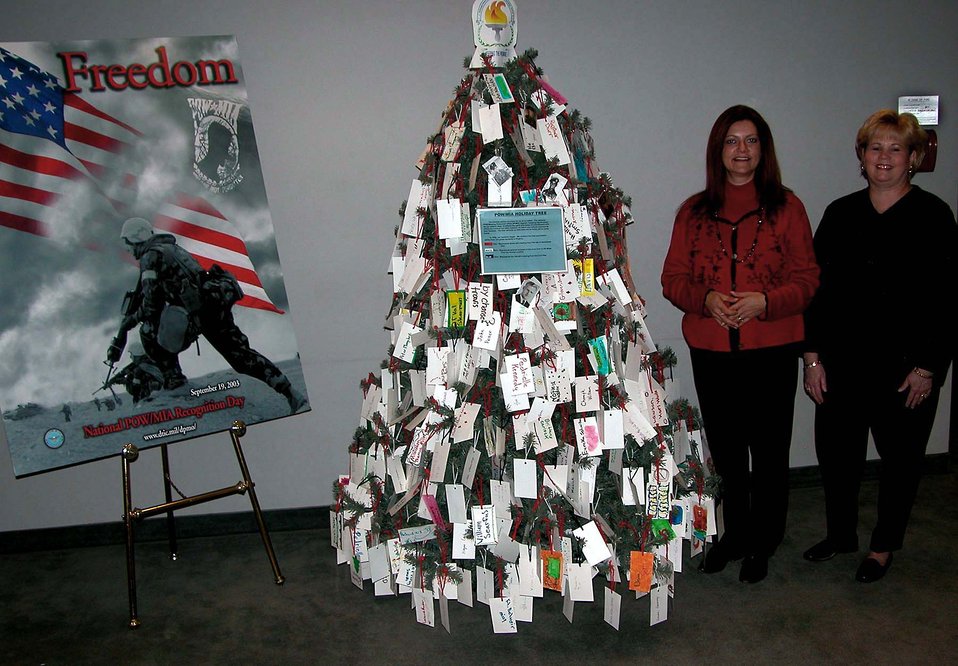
Lightless holiday tree honors missing

WASHINGTON -- Retired Army Master Sgt. Peggy Marish-Boos (left) and Debbie Landon pose by the POW/MIA holiday tree they decorated it as a reminder to people in the Defense POW/Missing Personnel Office of why they do what they do. At the left is the 2003 National POW/MIA Recognition Day poster.